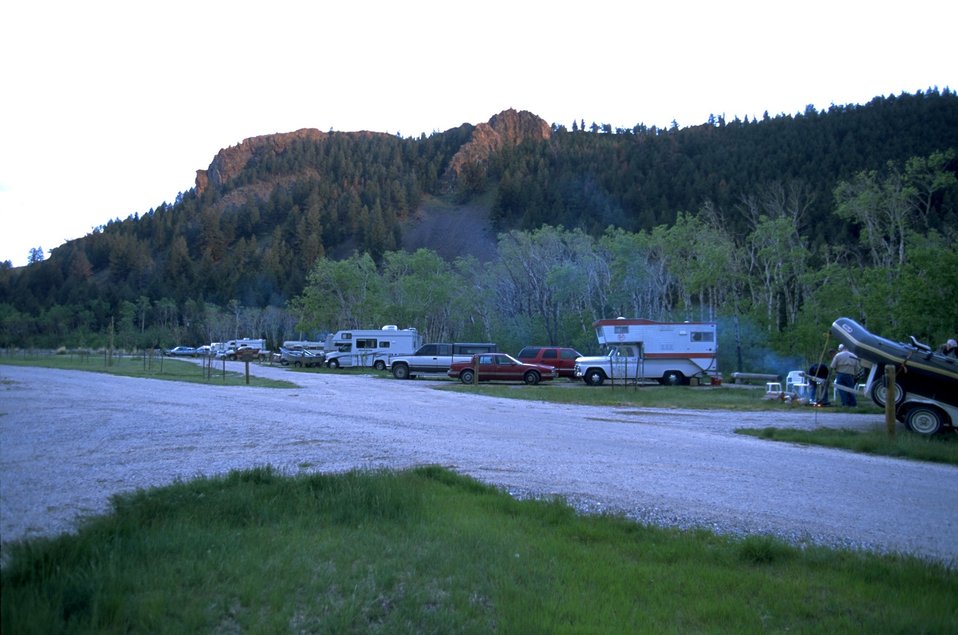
Campers at Divide Campground